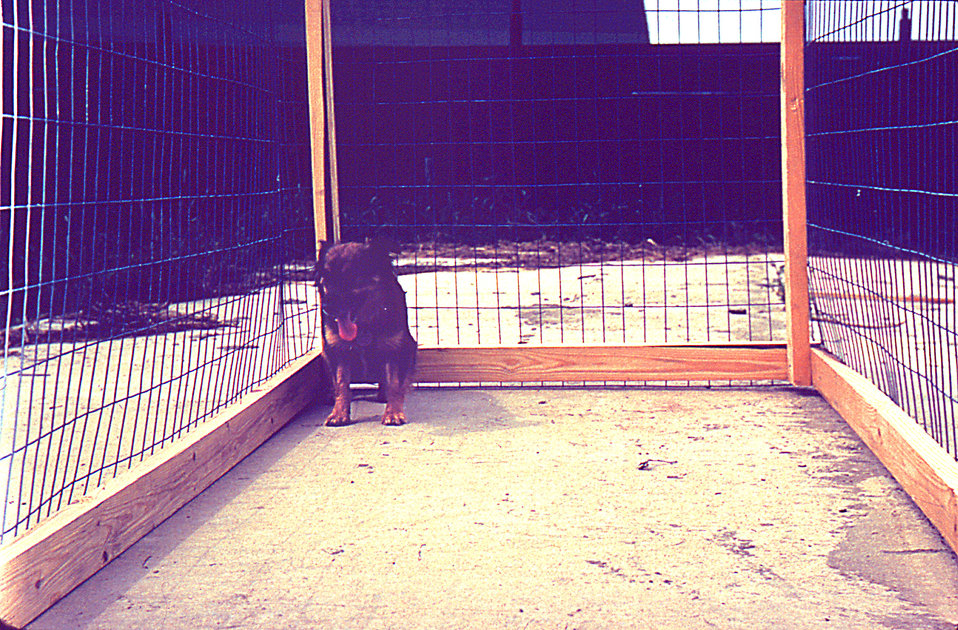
Here a penned dog is afflicted with dumb rabies, manifested as depression, lethargy and a seemingly overly tame disposition.